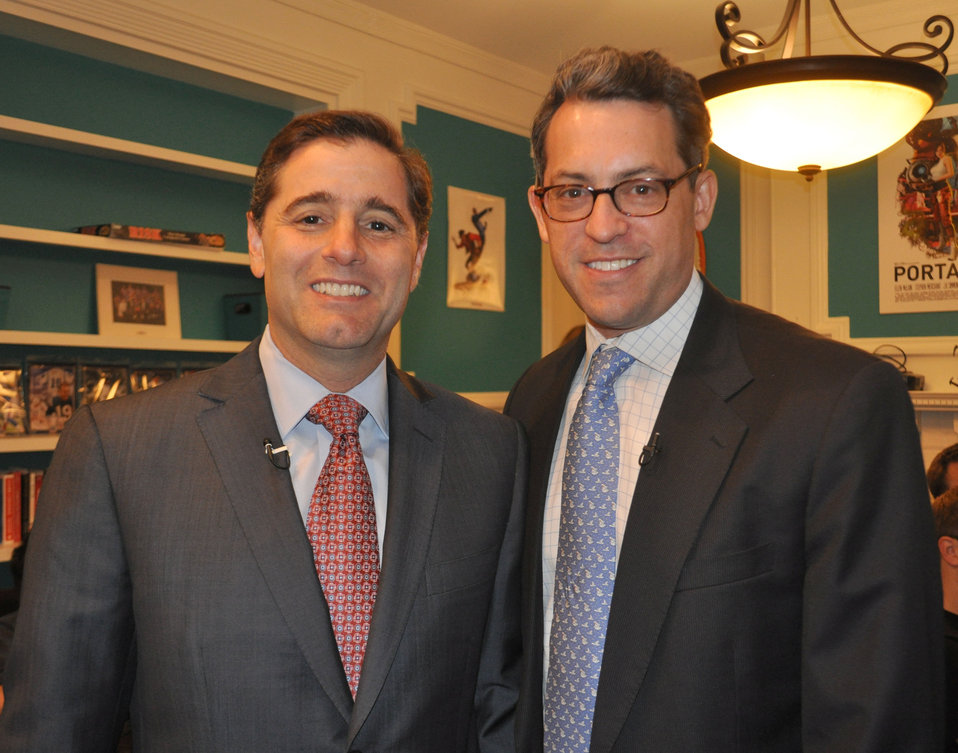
Broadband Challenges and Opportunities, at Vox Media